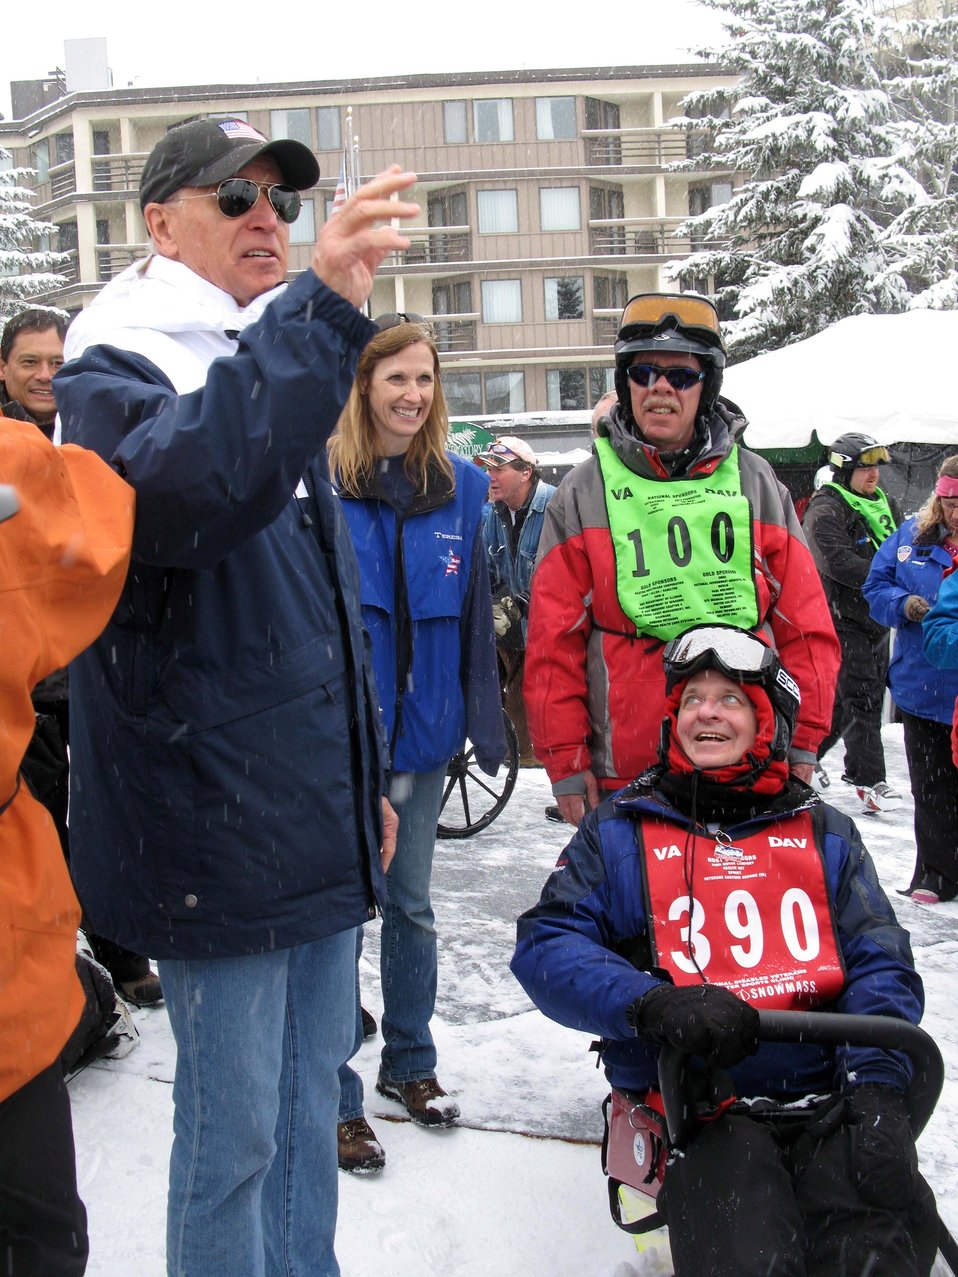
Disabled veterans sports clinic opens in Colorado

Vice President Joe Biden makes a surprise appearance amid a heavy snow March 28, 2011, to cheer on participants at the 25th National Disabled Veterans Winter Sports Clinic in Snowmass Village, Colo.